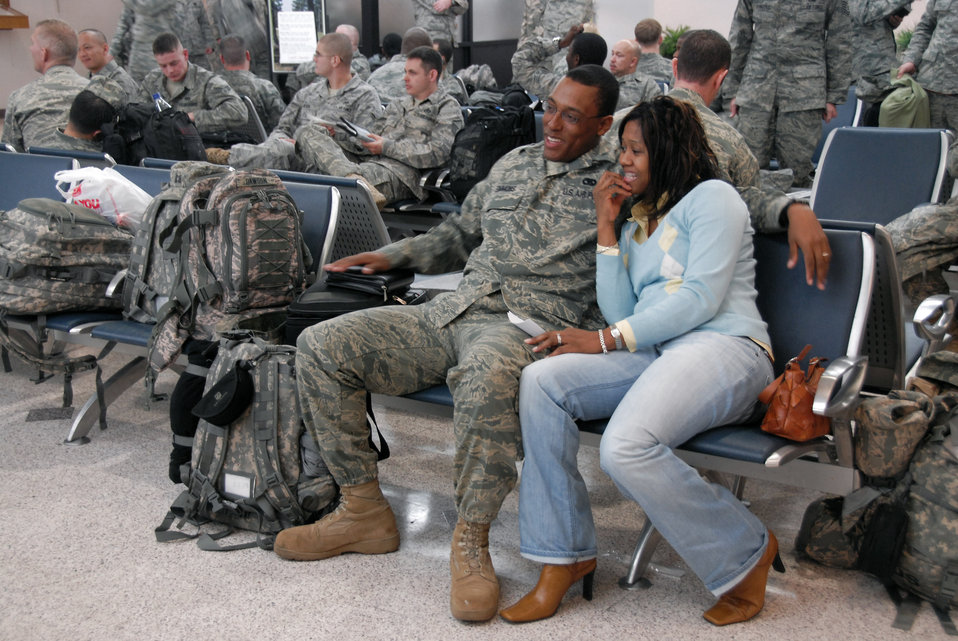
CAFB: Gateway to AOR

Capt. Christopher Simmons and his wife, Tasha, wait together in the 437th Aerial Port Squadron passenger terminal at Charleston Air Force Base, S.C., Feb. 7 until it is time for him to board the aircraft that will take him to his deployed location. More than 800 Airmen from various installations throughout the Air Force have been coming to Charleston AFB since Dec. 22, 2008 to be deployed. The base is one of five aerial ports of embarkation that makes it more convenient for Airmen to deploy to the area of responsibility. Captain Simmons is with the 52nd Logistics Readiness Squadron, Spangdahlem AB, Germany.